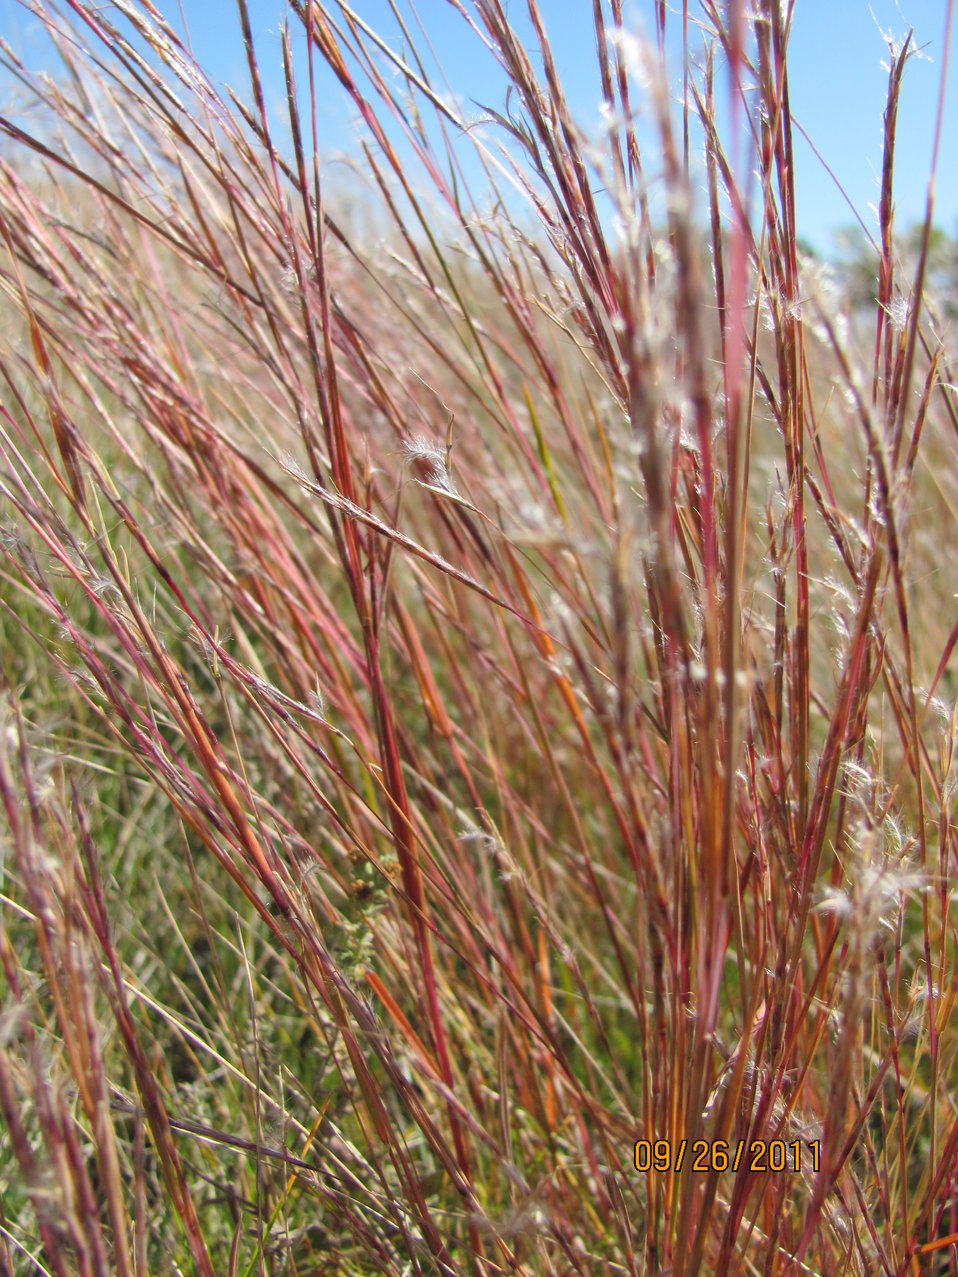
Little Bluestem (Andropogon scoparius)

Little Bluestem is a native grass located within the tall, mixed-grass prairies of North Dakota. It is a warm season, perennial bunchgrass that reddens when maturity is reached. This specimen was found east of the reclaimed gravel pit on the Woodworth Station within Chase Lake National Wildlife Refuge in North Dakota.